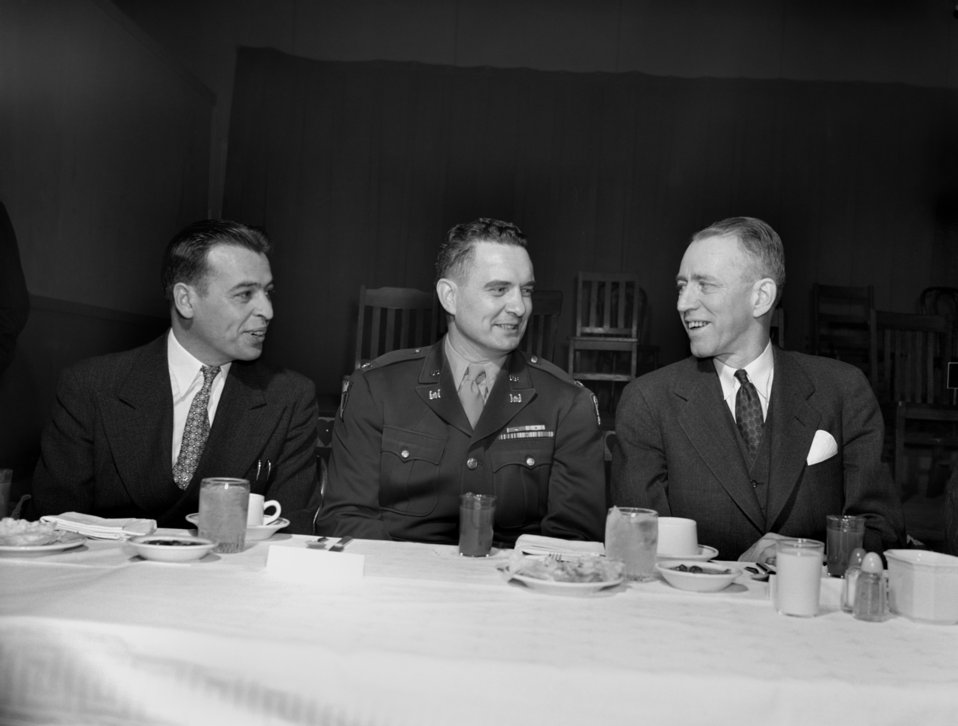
Republican meeting Oak Ridge 1947

3286-2 DOE photo Ed Westcott 1-15-1947 Oak Ridge Tennessee